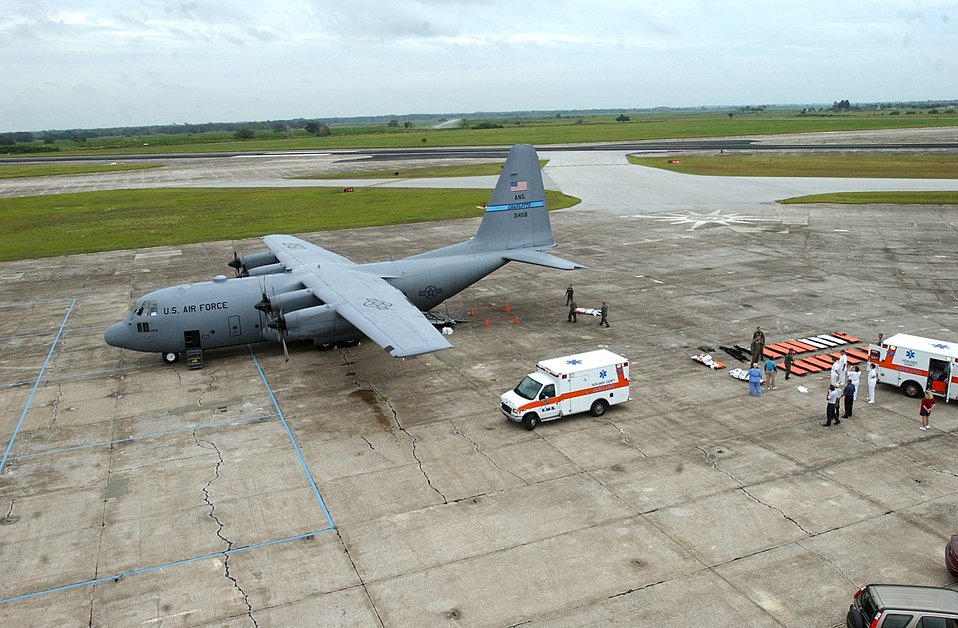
Heading Home

SEBRING AIRPORT, Fla. -- Aeromedical technicians from the North Carolina Air National Guard's 156th Aeromedical Evacuation Squadron here load patients onto a C-130 Hercules for their return to Key West after being evacuated because of Hurricane Rita. The 156th provided medical care to patients in flight.